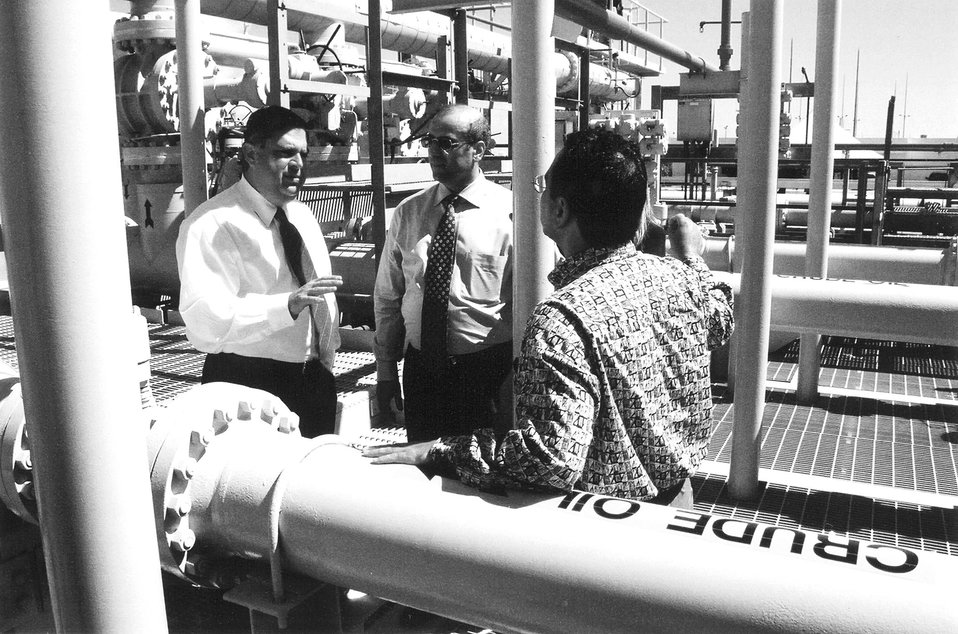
SECRETARY ABRAHAM AND RUSSIAN MINISTER YUSUFOV VISITING STRATEGIC PETROLEUM RESERVE OPERATIONS AT BRYAN MOUND.

THE UNITED STATES/RUSSIA COMMERCIAL ENERGY SUMMIT WAS HELD IN HOUSTON, TEXAS, OCTOBER 1-2, 2002. AS PART OF THE SUMMIT, SECRETARY ABRAHAM AND RUSSIAN MINISTER OF ENERGY IGOR YUSUFOV VISITED DOE'S STRATEGIC PETROLEUM RESERVE BRYAN MOUND SITE, IN FREEPORT, TEXAS.